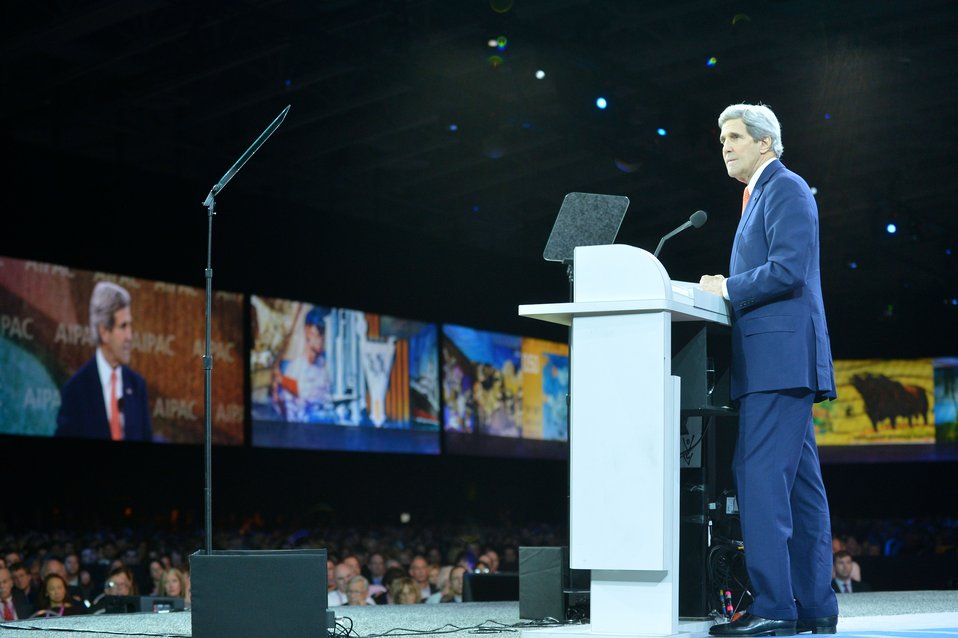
Secretary Kerry Delivers Remarks at the American Israel Public Affairs Committee Conference

U.S. Secretary of State John Kerry delivers remarks at the American Israel Public Affairs Committee (AIPAC) Conference at the Washington Convention Center in Washington, D.C., on March 3, 2014.